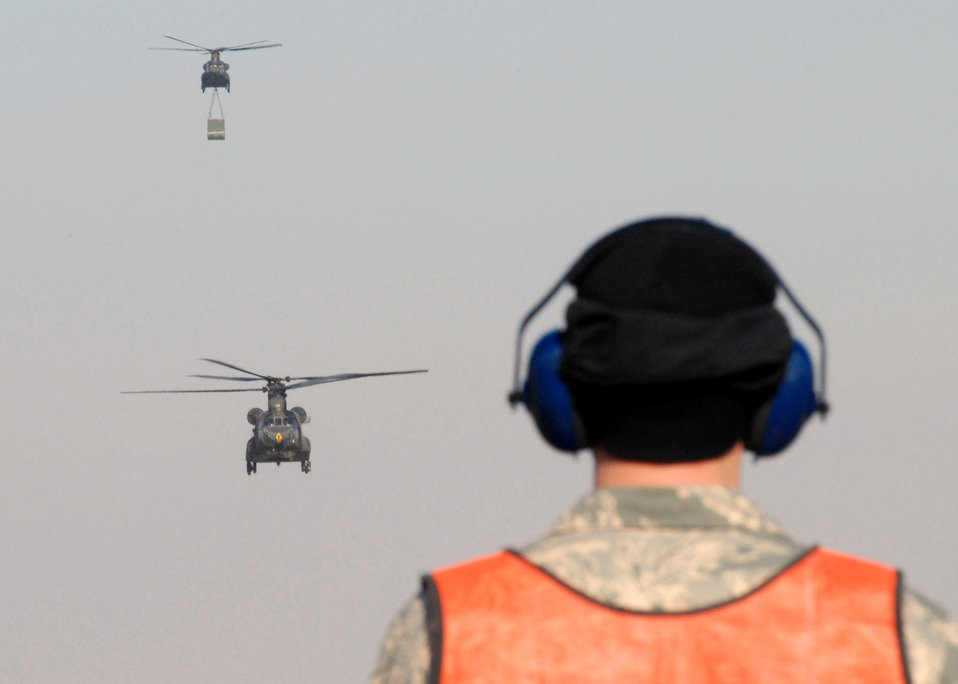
Korea Air Component Comand commander holds 6 ACCES

Senior Airman Paul Epping stands by to marshal two CH-47 Chinook helicopters as they arrive March 1at Kunsan Air Base, South Korea. The Chinook's arrived from Camp Humphrey's, Bravo Company 4-2, as part of the Key Resolve/Foal Eagle Exercise, enhancing combat readiness and joint interoperability. Airman Epping is a crew chief from the 8th Maintenance Squadron.